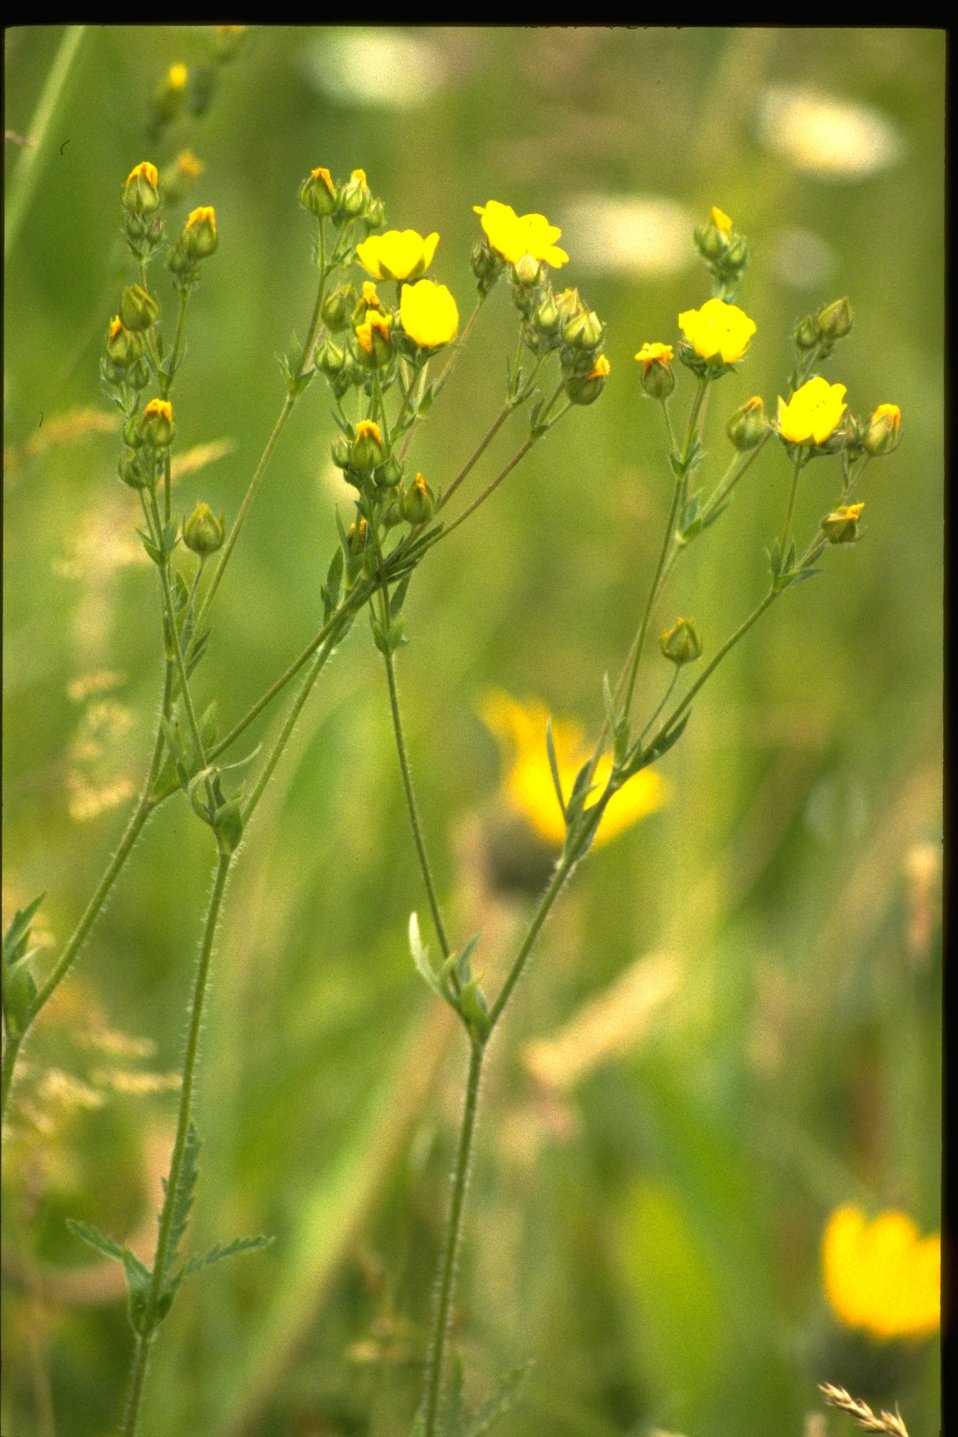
Medium shot of Potentilla.